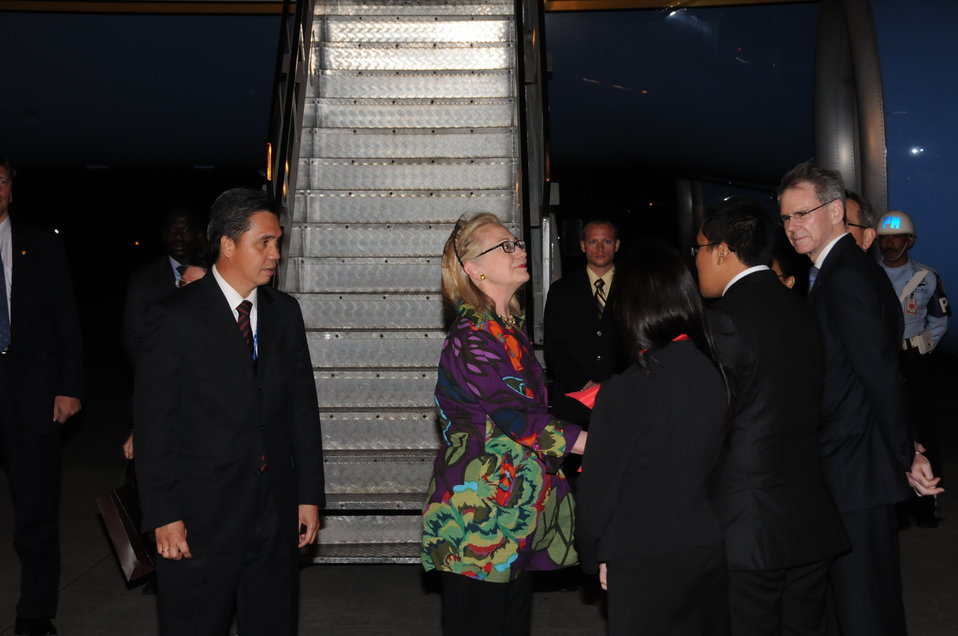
Secretary Clinton Is Greeted By Indonesian Director for Protocol Kandou, Indonesian foreign Ministry Protocol Liaisons Novita and Moniaga, and Ambassador Carden

U.S. Secretary of State Hillary Rodham Clinton, center; is greeted by Indonesian Director for Protocol Harry Kandou, left; Indonesian Foreign Ministry Protocol Liaison Bayu Rahmat Novita, second from right; Indonesian Foreign Ministry Protocol Liaison Renita Moniaga, third from right; and U.S. Ambassador to ASEAN David Carden, far right; upon her arrival to Bali, Indonesia, on July 21, 2011.